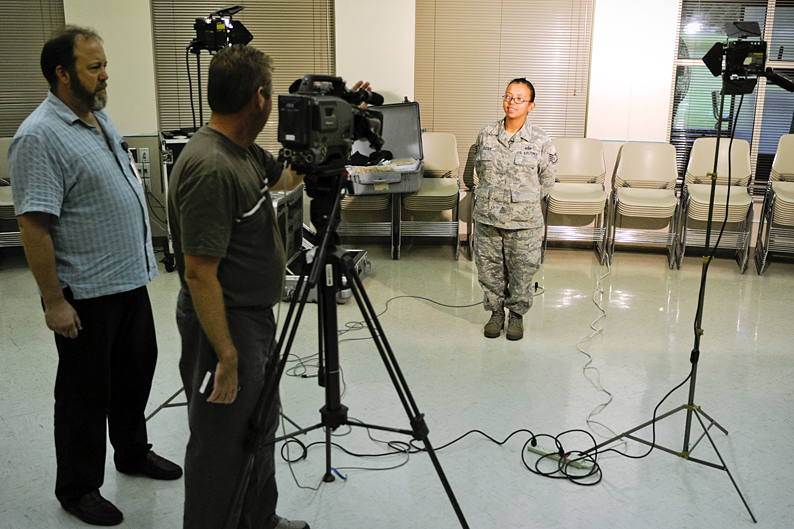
Holiday greets team

Erich Schwab (left) observes as Scott Williams sets up a shot with the help of Staff Sgt. Shizuko Shearl as they go through a practice session Sept. 7, 2010, for this year’s holiday greetings program. Both Mr. Schwab and Mr. Williams will be part of the European greetings team that will spend the next five weeks collecting greetings in the U.K., Germany, Italy and Kosovo.